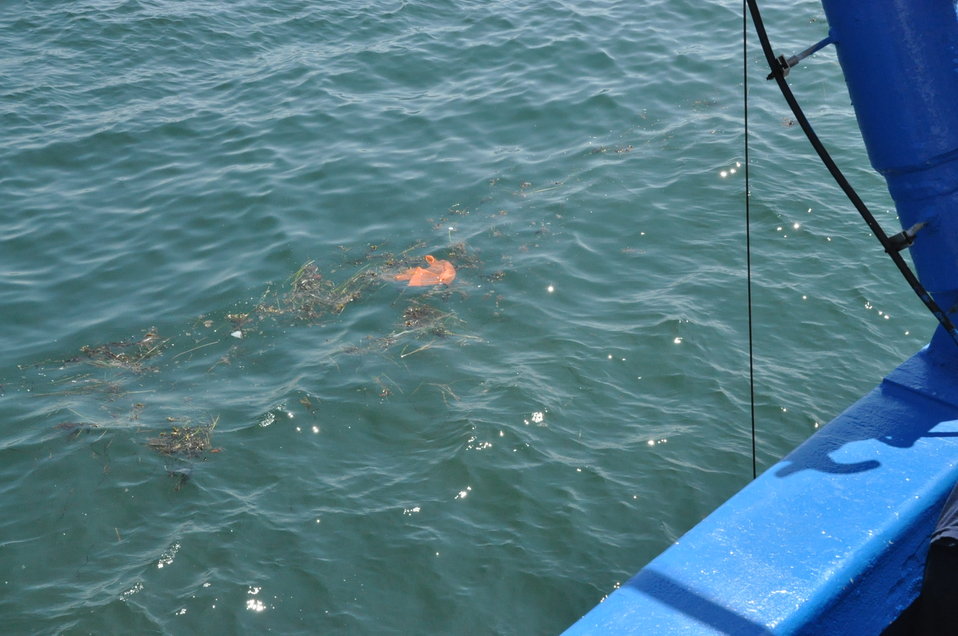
August 5, 2011 doesn't take long to come across traces of human activity...

While we are sampling for completely different indicators of human influence on our ocean and coastal environment, the obvious ones float right by.